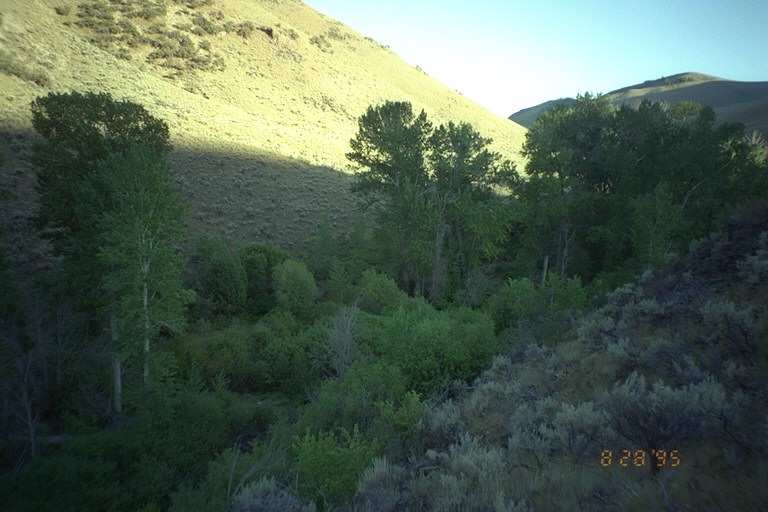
Riparian area Public Lands Salmon Field Office UCSC Upper Columbia Salmon Clearwater District